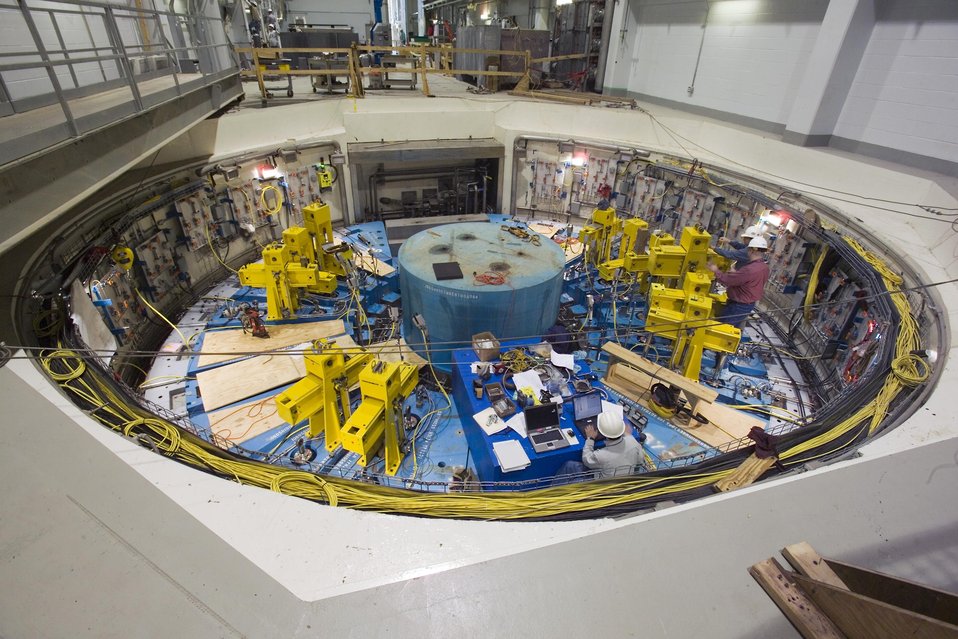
CONSTRUCTION PROGRESS OF THE TARGET AT THE SPALLATION NEUTRON SOURCE(SNS).

THE SPALLATION NEUTRON SOURCE (SNS) IS AN ACCELERATOR BASED NEUTRON SOURCE BEING BUILT IN OAK RIDGE, TENNESSE BY THE DEPARTMENT OF ENERGY. SCHEDULED FOR COMPLETION IN 2006, THE SNS WILL PROVIDE THE MOST INTENSE PULSED POWER NEUTRON BEAMS IN THE WORLD FOR SCIENTIFIC RESEARCH AND INDUSTRIAL DEVELOPMENT.